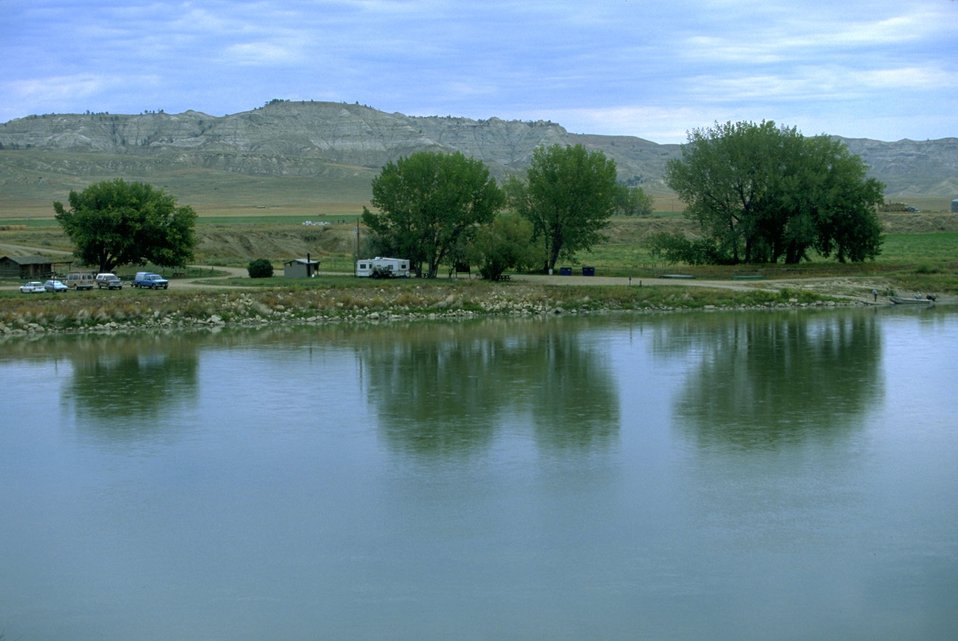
Judith Landing campground on Upper Missouri River